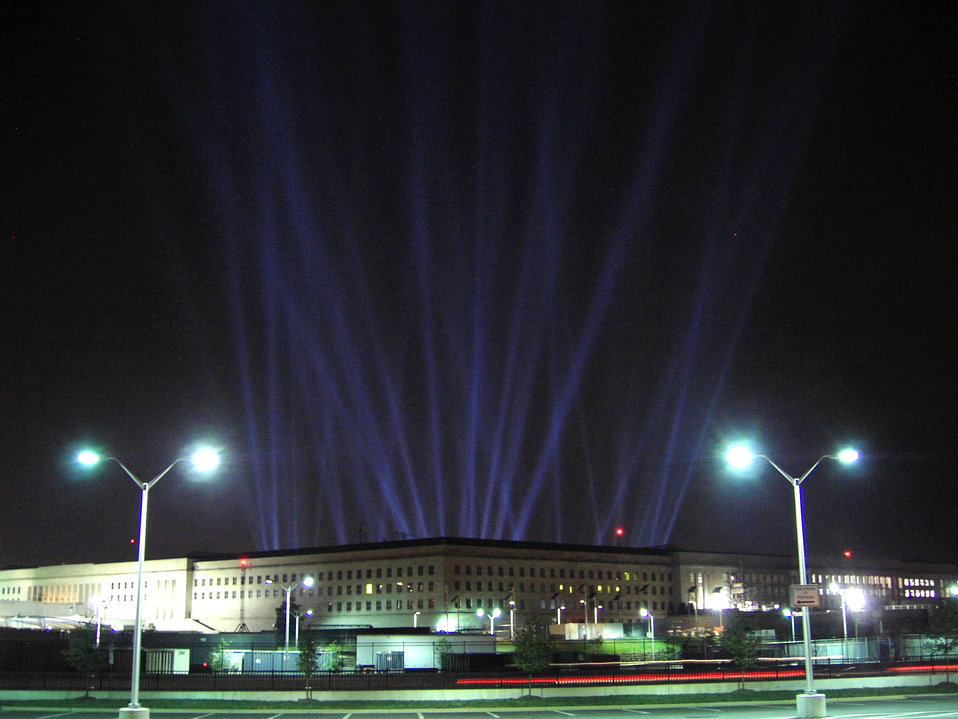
Beams of light

On the fifth anniversary of the 9/11 terrorist attacks, 184 beams of light rise from the courtyard of the Pentagon. The lights are to remember the 184 lives lost when American Airlines Flight 77 crashed into the Pentagon Sept. 11, 2001.